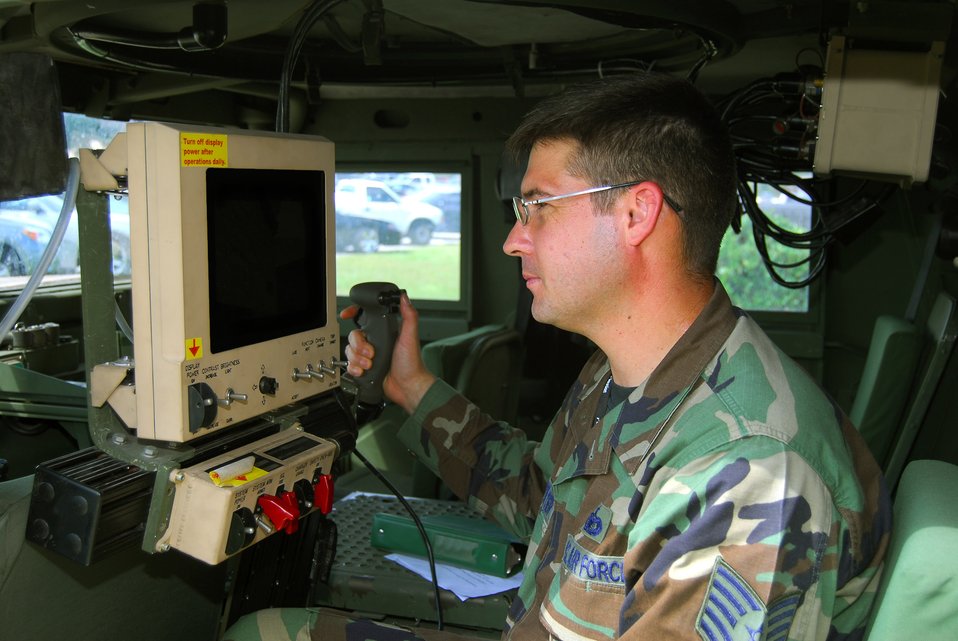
Deployed gunners have eagle eyes with safer turret system

Tech. Sgt. Mark Klinefelter operates a common remotely operated weapon station Sept. 12 at Moody Air Force Base, Ga. The CROWS turret allows a gunner to remain safely protected inside his armored vehicle while operating the computer-stabilized, laser-aimed weapon. Sergeank Klinefelter is assigned to the 824th Security Forces Squadron Alpha Flight.